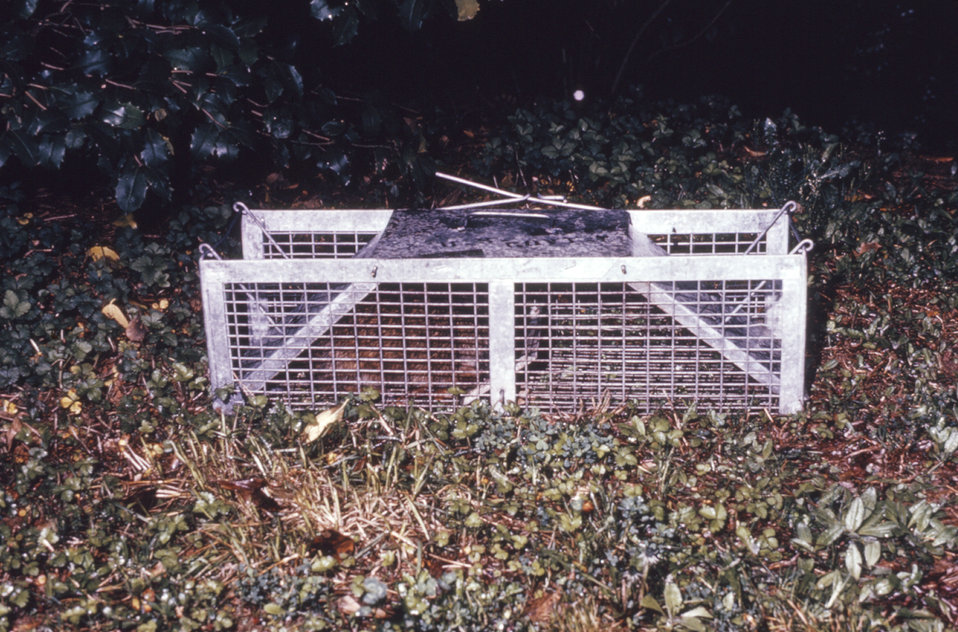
This photograph depicts a Havahart� animal trap used during an arboviral study.